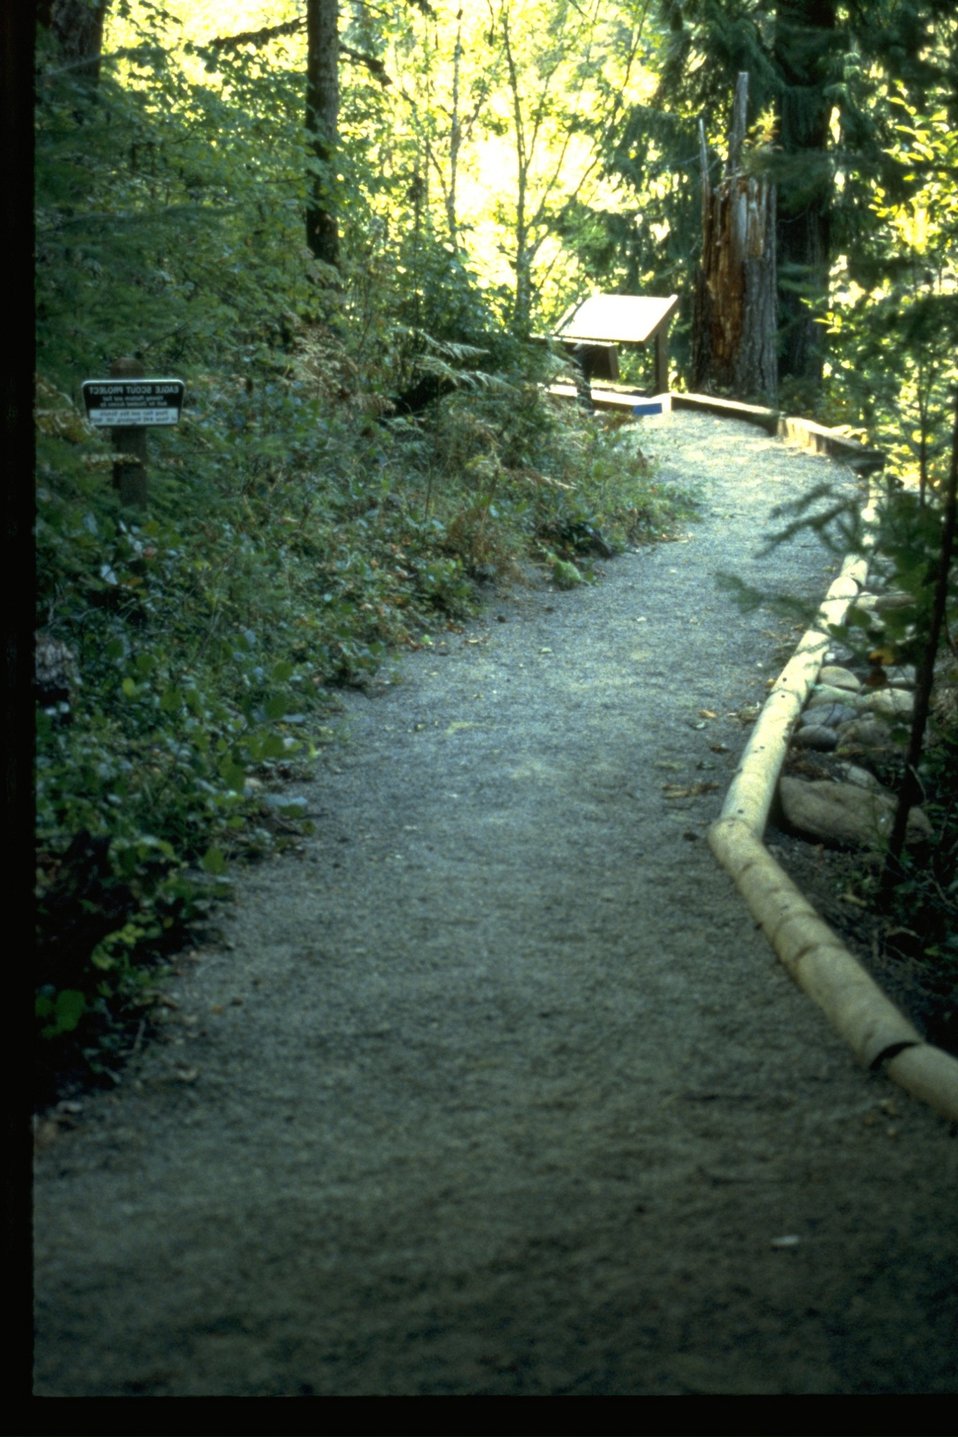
Trail to Deadline Falls.